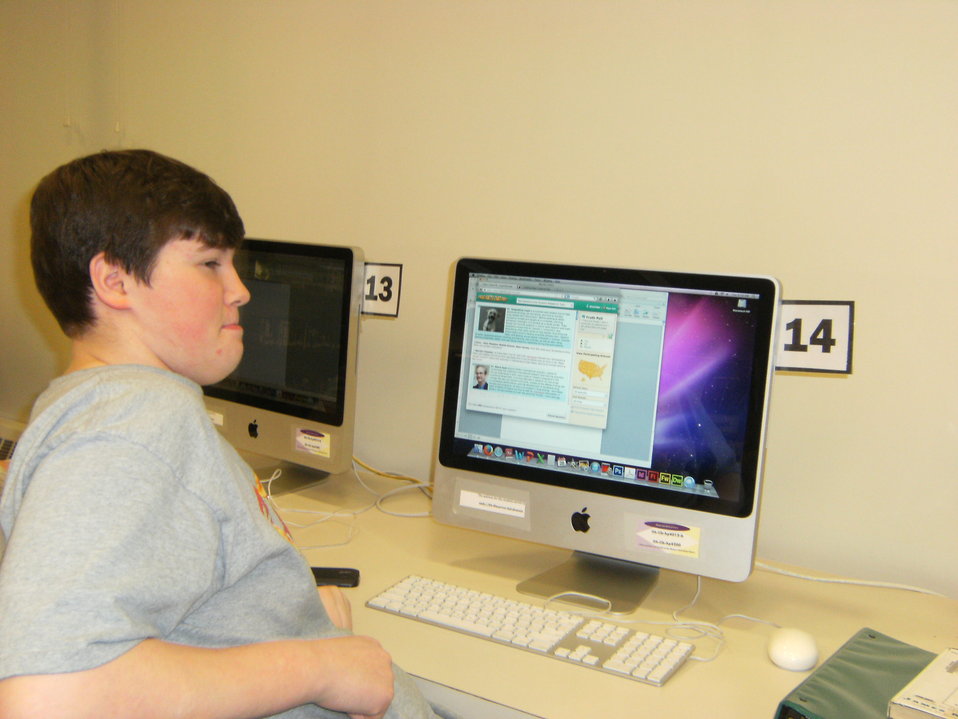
Chat Day - Alaska